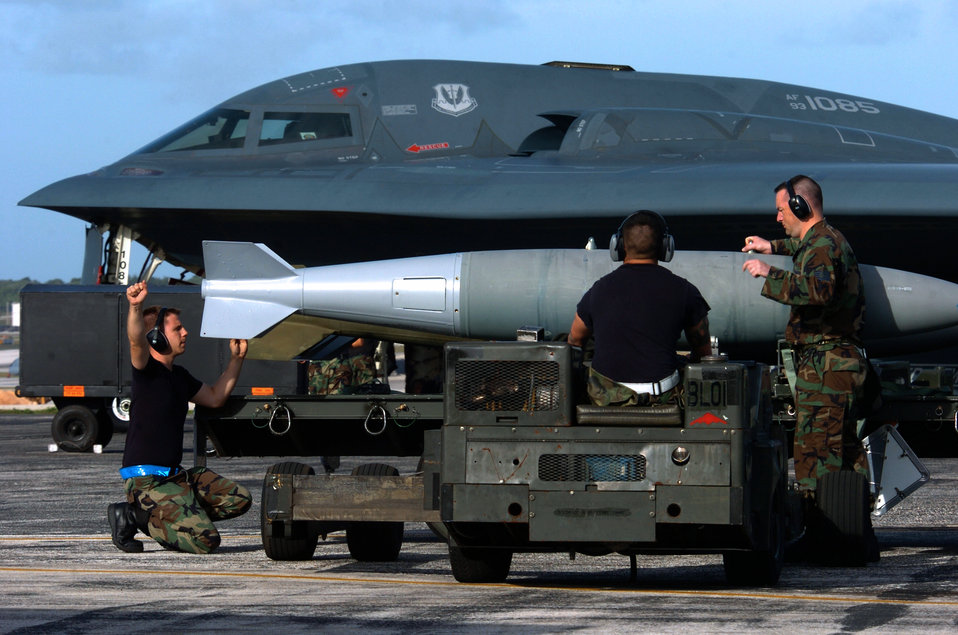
Putting the 'bomb' in bomber

ANDERSEN AIR FORCE BASE, Guam -- (From left) Airman 1st Class Tommy Day, Senior Airman Phillip Ruiz and Tech. Sgt. Dwayne Bolles prepare to load a bomb onto a B-2 Spirit bomber here. They are weapons specialists deployed from the 509th Aircraft Maintenance Squadron at Whiteman Air Force Base, Mo.